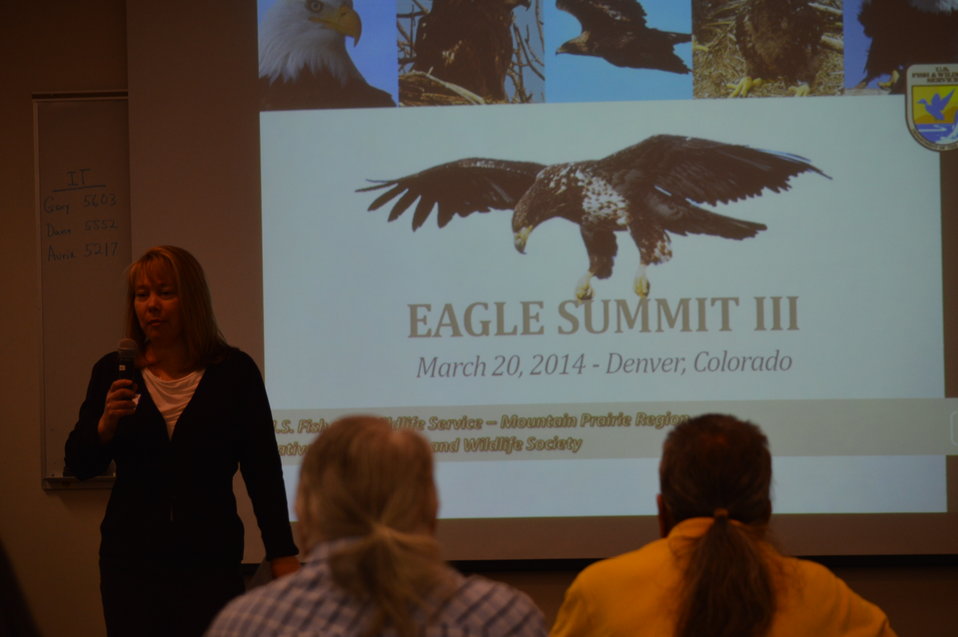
Eagle Summit III in Denver, Colorado on March 20, 2014 at the Rocky Mountain Arsenal National Wildlife Refuge.